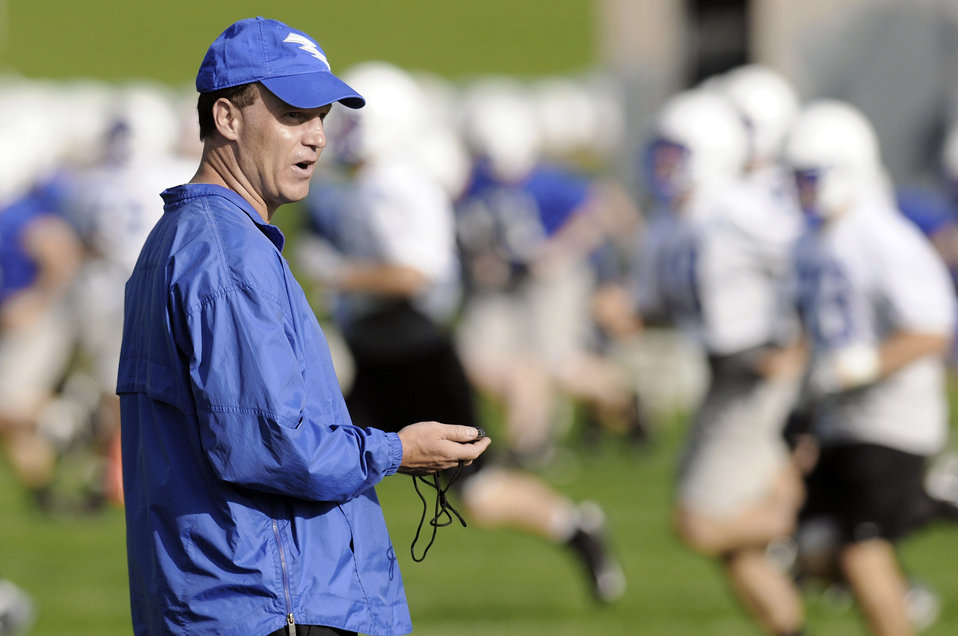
Academy football drills

Third-year Falcons head coach Troy Calhoun leads football practice Aug. 4 at the U.S. Air Force Academy near Colorado Springs, Colo. The Falcons host the Nicholls State Colonels Sept. 5 in their home opener.